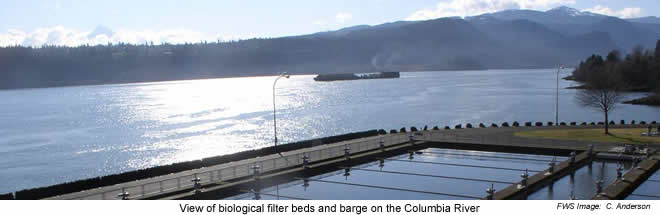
Biological filter beds - Spring Creek NFH

Water is recycled through a unique, oyster shell filtration system to conserve water and reduce pollution.